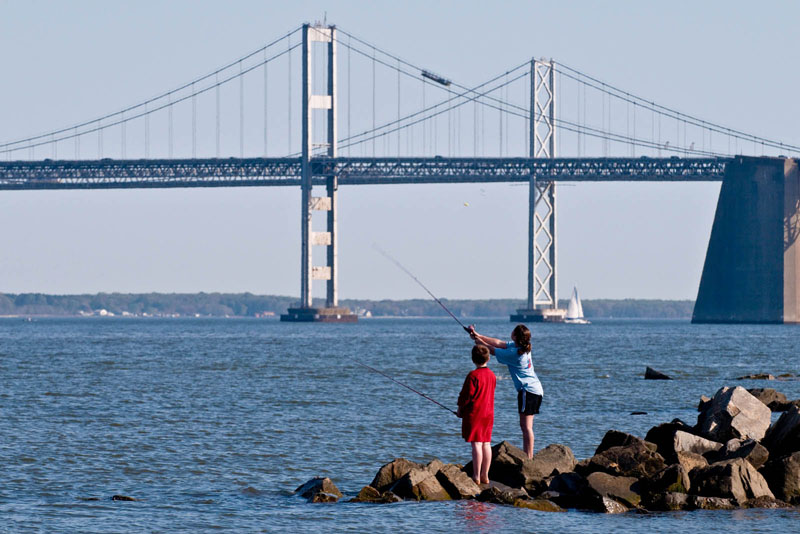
Fishing during the salmon run, Kenai river, AK. 2006 USEPA Photo by Eric Vance